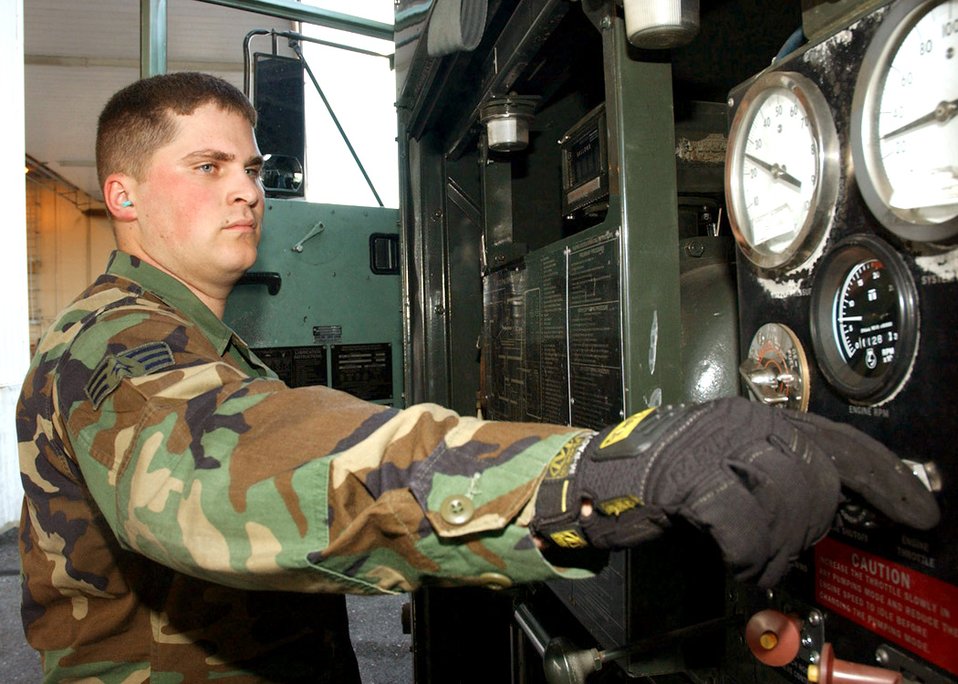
Earth friendly Falcon fill up

EIELSON AIR FORCE BASE, Alaska -- Senior Airman Trevor Smith monitors switches and gauges while refueling an F-16 Fighting Falcon here July 6 using checklists and techniques that are part of the environmental management system. Refueling aircraft on the flightline is considered an aspect of environmental awareness because of the potential effect even the smallest fuel spill could have on soil, groundwater or surface water. Airmen Smith is assigned to the 354th Logistics Readiness Squadron.